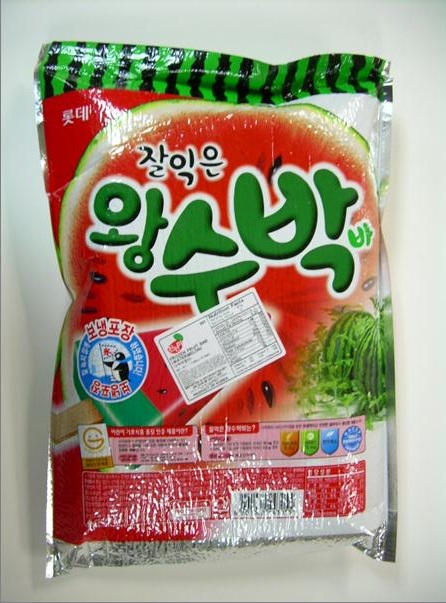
RECALLED – Frozen fruit bar (watermelon flavor)

February 28, 2014 – Product Recall – Jinsunmi International Inc. Issues A Voluntary Recall Of Its 17.98 oz Lotte Brand Frozen Fruit Bar (watermelon flavor) Due To Undeclared Peanuts.